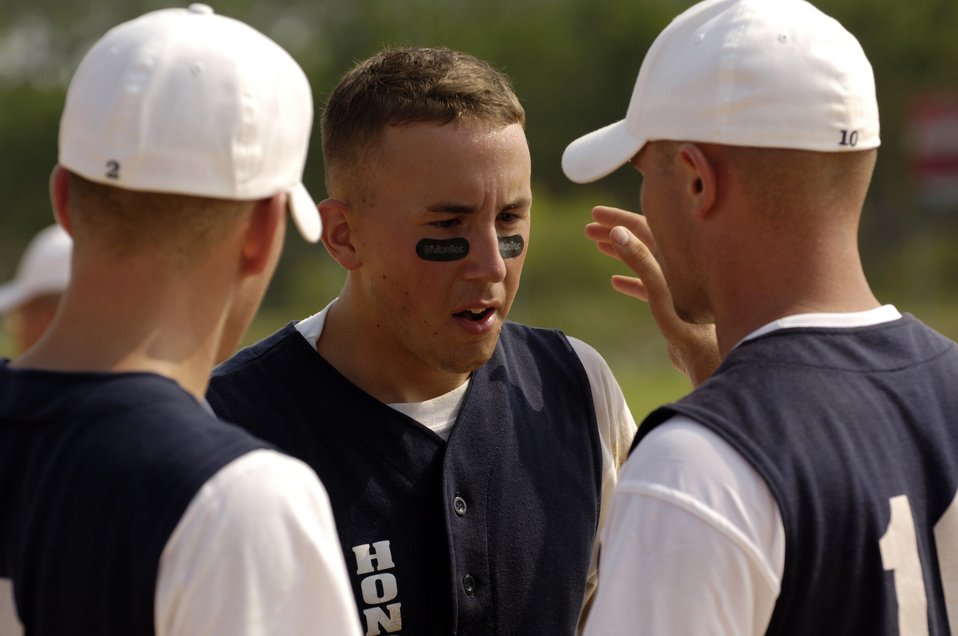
Taking on the world

PANAMA CITY BEACH, Fla. -- Honor Guard team members Wes Brin (right) and Adam Clonick confer with Michael McCabe (center) during the 2005 World Military Championship softball tournament held here Aug. 19 to 21. The tournament featured more than 60 intramural and varsity teams.